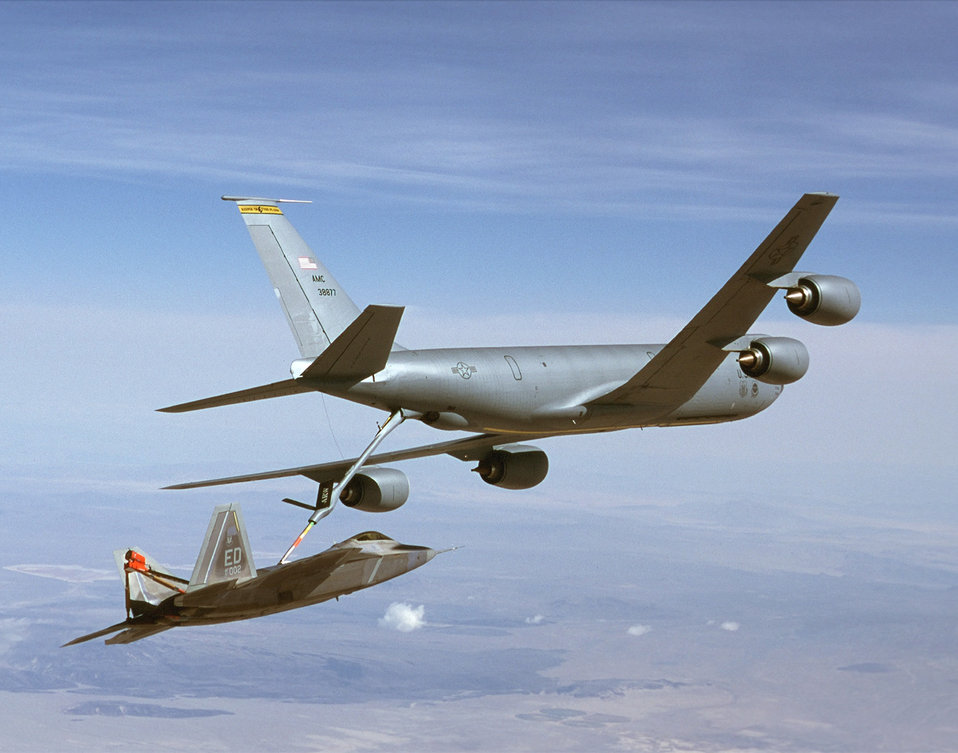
Thirsty Raptor

FILE PHOTO -- A KC-135R Stratotanker refuels an F/A-22 Raptor. The KC-135's principal mission is air refueling. This asset greatly enhances the U. S. Air Force's capability to accomplish its mission of Global Engagement.